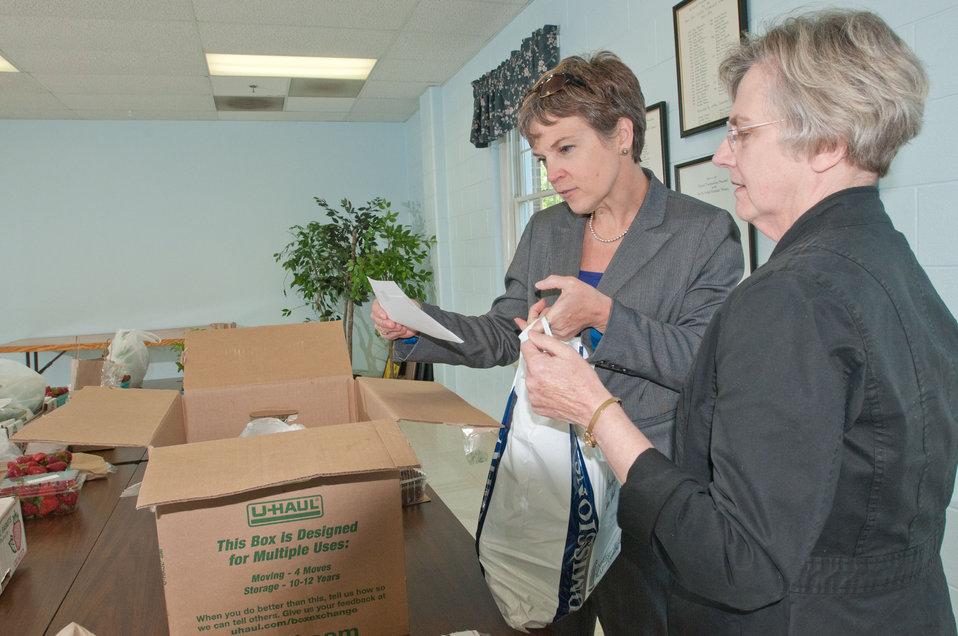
Fall Line Farms volunteer Jane Tucker (right) assists Anne Van Wart at the Bon Air United Methodist Church pick-up point, in Richmond, VA, on Thursday, May 5, 2011. Volunteers get free membership for setting up, operating and assisting other members with their weekly pickup. Each order is printed so members can check their order. This is one of several locations in the Richmond area that are open every Thursday afternoon. This local food hub offers a wide variety of household food staples and specialty items. Members can pick their customized orders from an ever changing inventory of fruits, vegetables, meats, soaps, eggs, cheeses, flowers, honey, pastas, sauces, syrups, baked goods, mushrooms, flour and grains. Suppliers post what they have on a Lulus Local Food online listing and customers can make their selection.